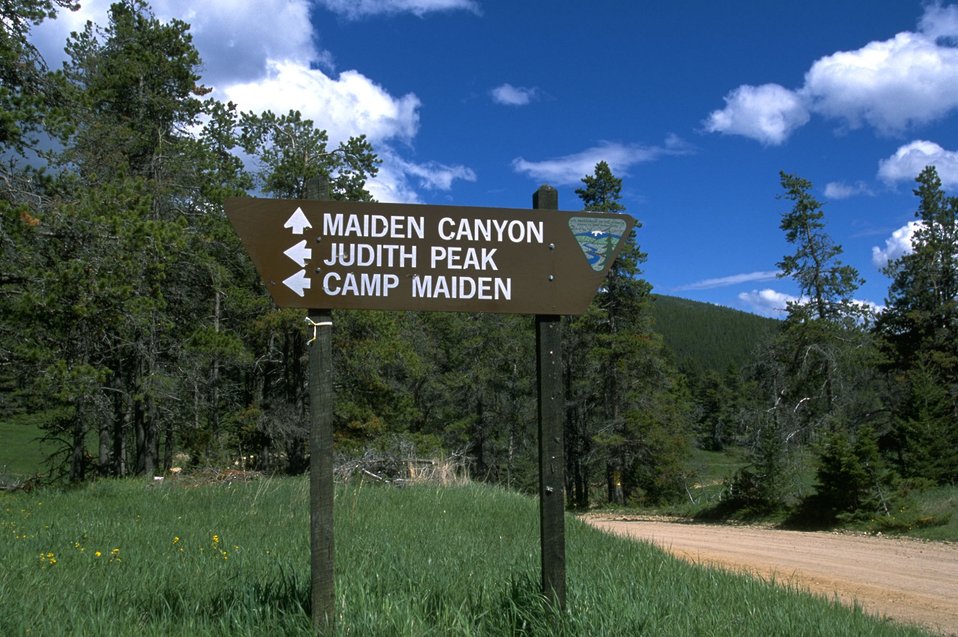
Location sign in the Judith Mountains